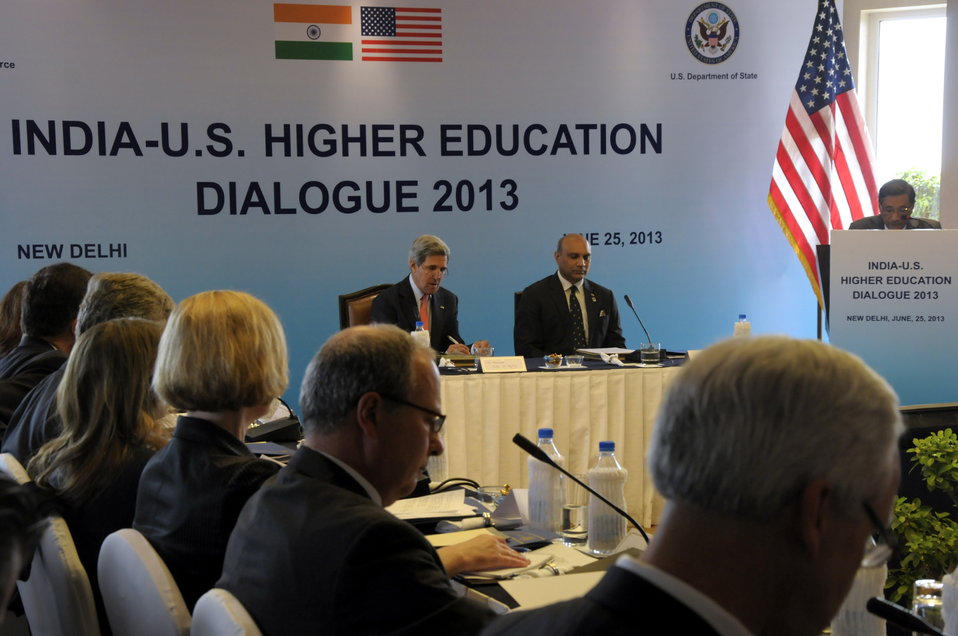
Secretary Kerry Attends a Higher Education Forum

U.S. Secretary of State John Kerry opens a Higher Education Dialogue in New Delhi, India, on June 25, 2013.